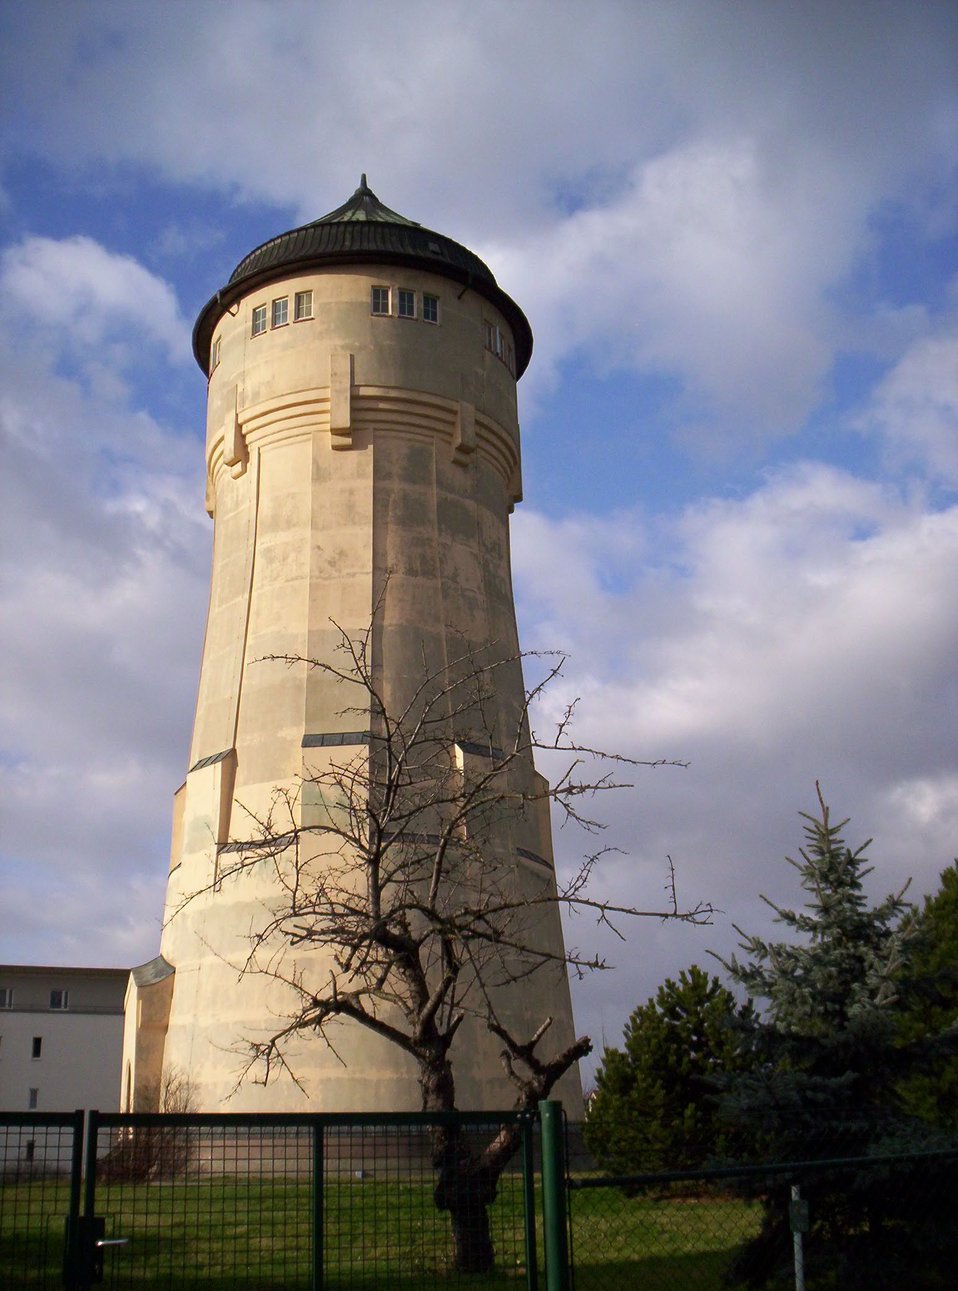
Wasserturm in Leipzig-Lindenthal